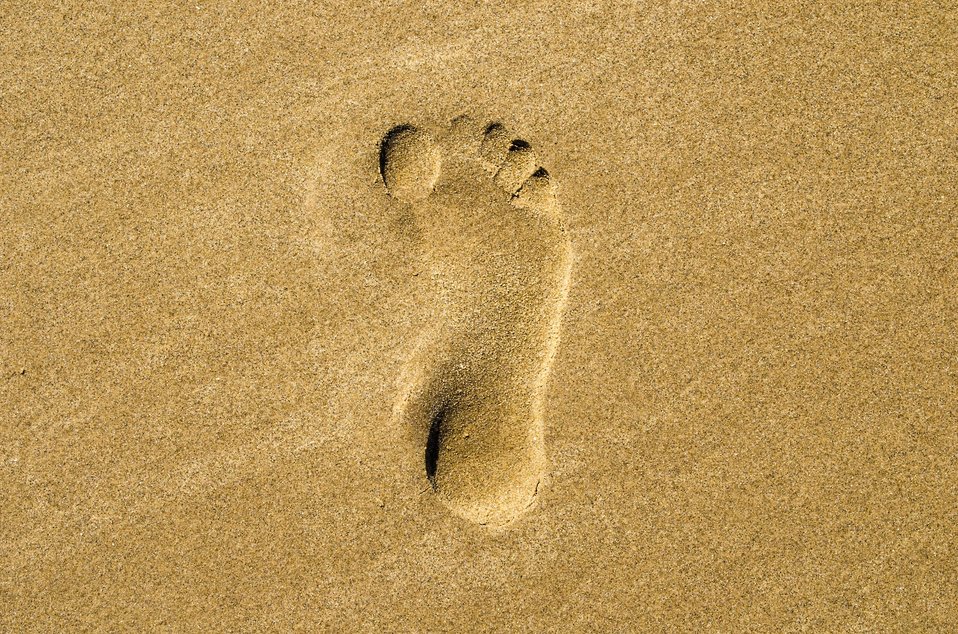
Footprint in sand on beach.